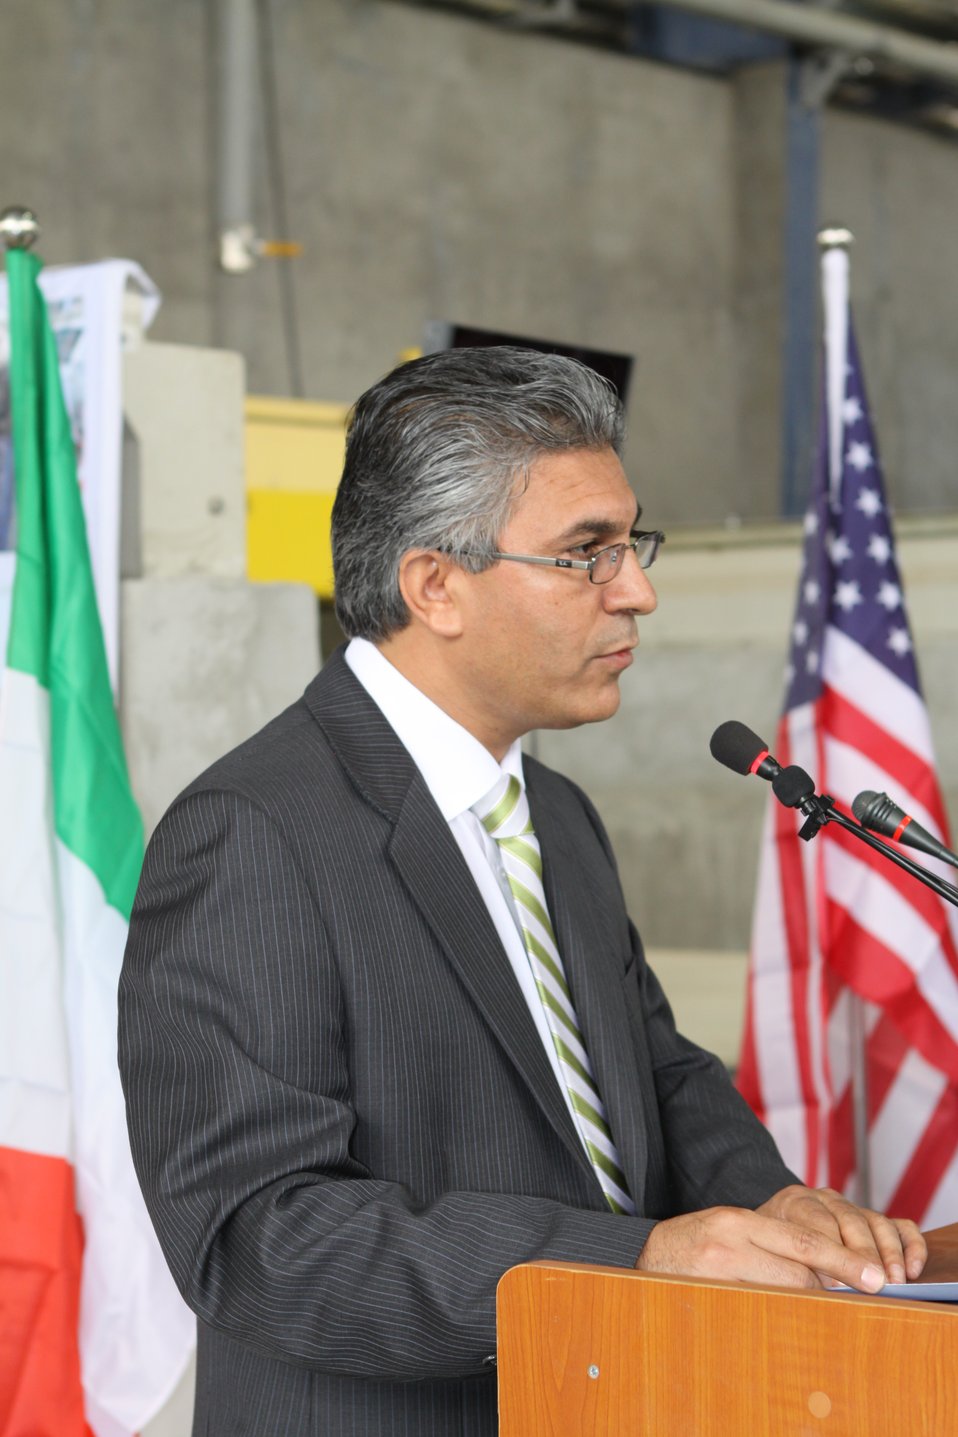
100525 Hirat Marble Conference 155